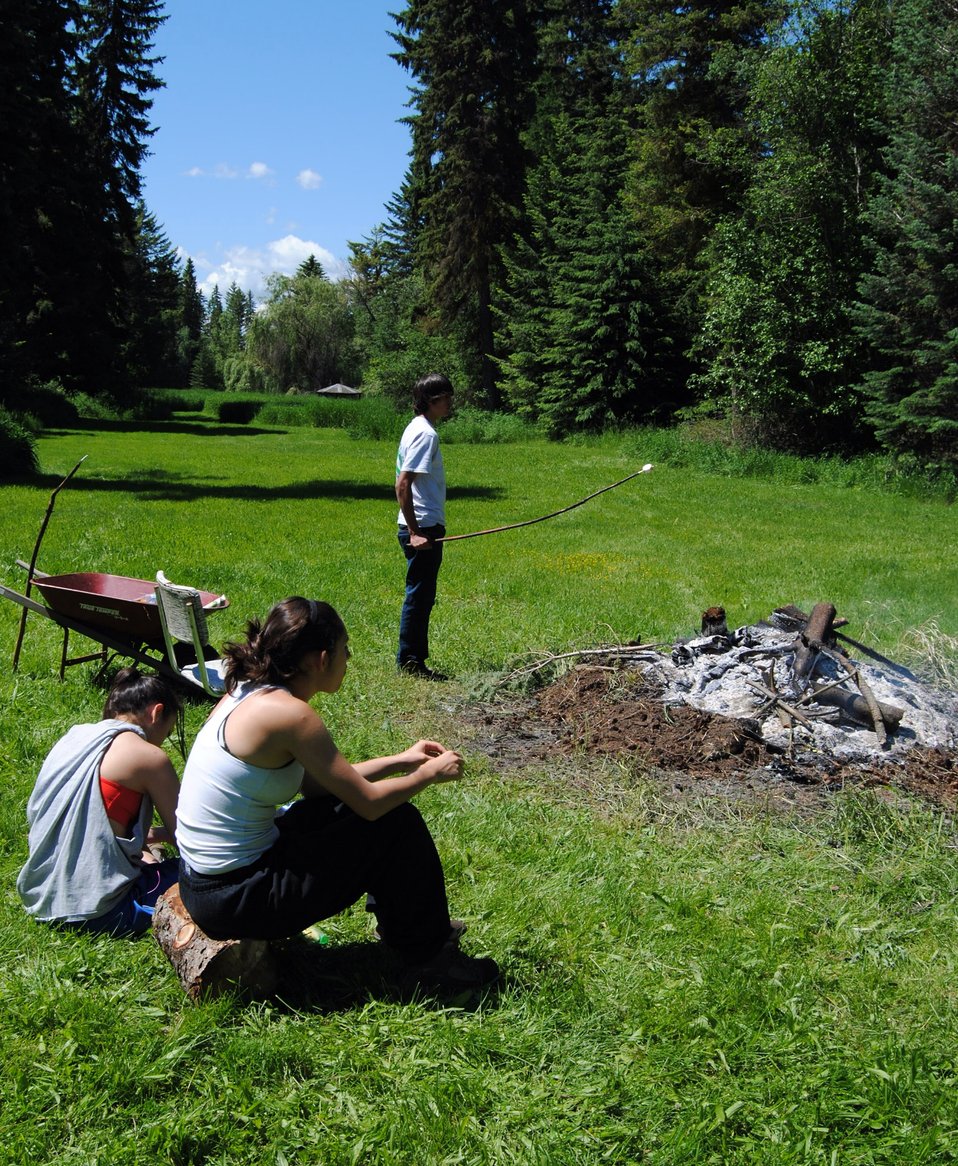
Week 2, Montana Waterfowl Foundation, Ronan, MT

YCC crew, Emily McCrea, LaGlen Mitchell, and Payton Adams take a break by roasting marshmallows over the hot coals of their brush fire.